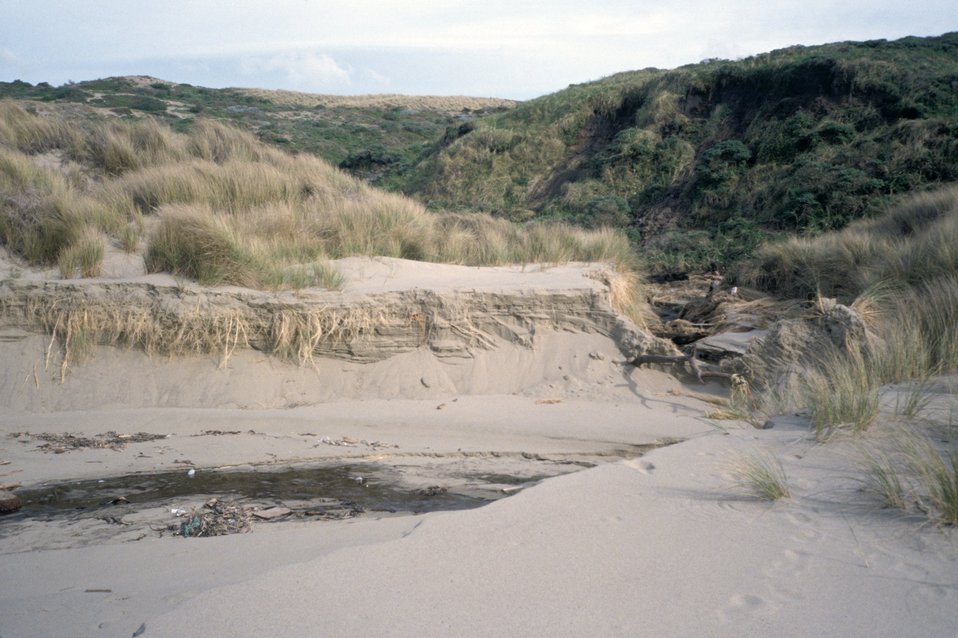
Point Reyes Great Beach. A stream cutting through the dunes.